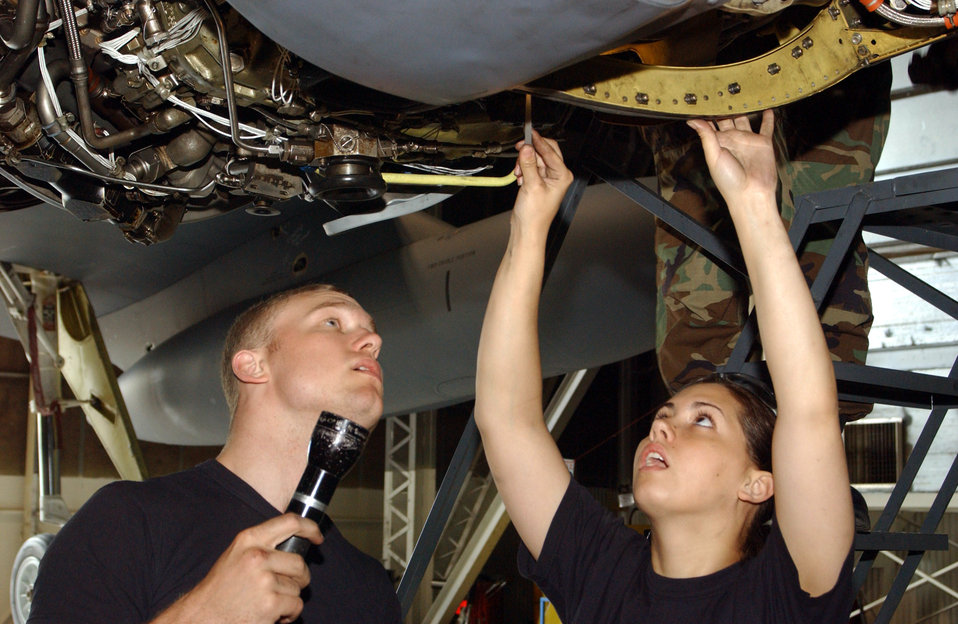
It takes two

MINOT AIR FORCE BASE, N.D -- Airmen 1st Class Mike Eady (left) and Rysta Hupe perform general maintenance on a B-52H Stratofortress engine here June 3. The Airmen are assigned to the 5th Maintenance Squadron.